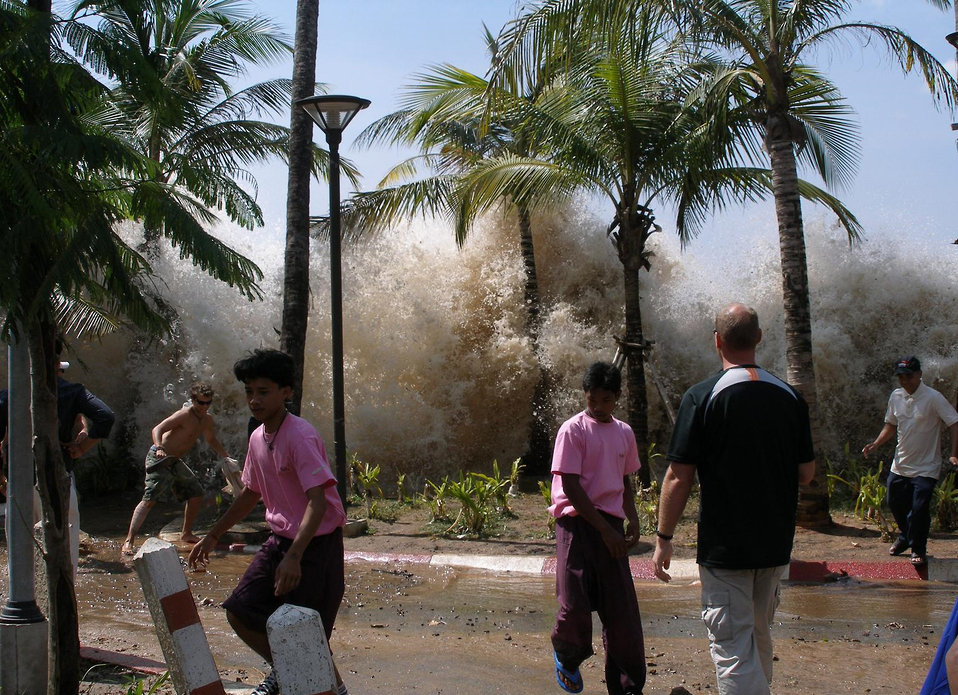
A photograph of the 2004 tsunami in Ao Nang, Krabi Province, Thailand. Fran√ßais†: Image montrant le raz-de-mar√©e de 2004 √† Ao Nang, en Tha√Ølande. Italiano: Una fotografia del maremoto dell'Oceano Indiano ad Ao Nang, in Tailandia. Espa√±ol: Imagen

A photograph of the 2004 tsunami in Ao Nang, Krabi Province, Thailand. Français†: Image montrant le raz-de-marée de 2004 à Ao Nang, en Thaïlande. Italiano: Una fotografia del maremoto dell'Oceano Indiano ad Ao Nang, in Tailandia. Español: Imagen del terremoto del Océano Índico de 2004 en Ao Nang, Tailandia. മലയാളം: 2004-ൽ ഇന്ത്യൻ മഹാസമുദ്രത്തിൽ ഉണ്ടായ സുനാമി, തായ്‌ലാന്റിലെ ആവോ നാങിൽ നിന്നുള്ള ചിത്രം. မြန်မာဘာသာ: ဆူနာမီ